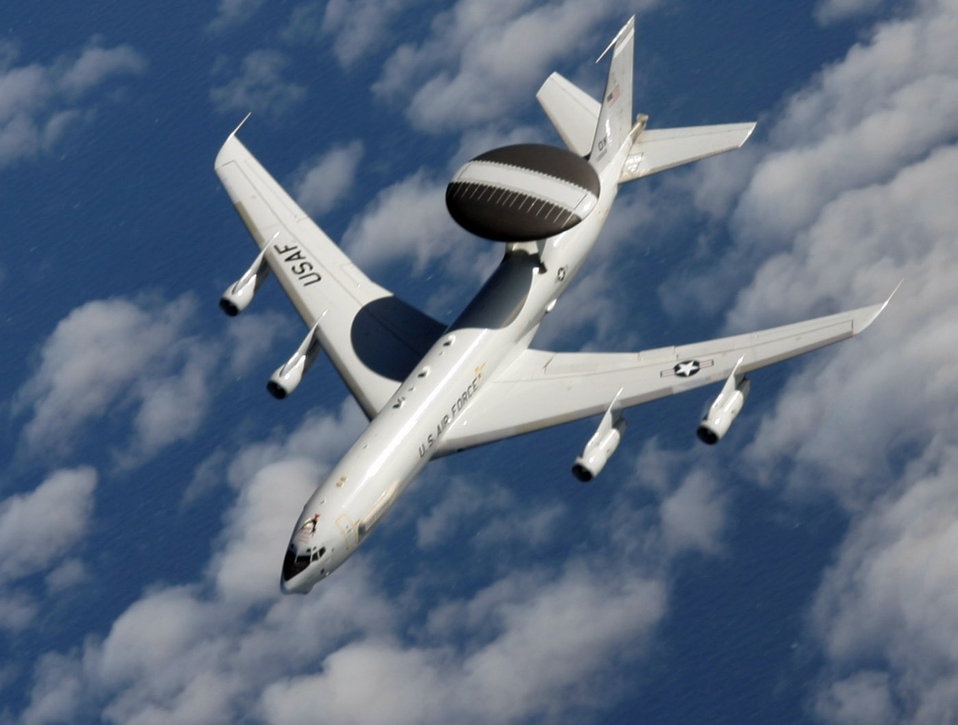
Keeping watch...

An E-3 Sentry AWACS flies a mission from Tinker Air Force Base, Okla. Due to the high demand for their unique capabilities; the E-3 has been deployed almost continually for the past 29 years.